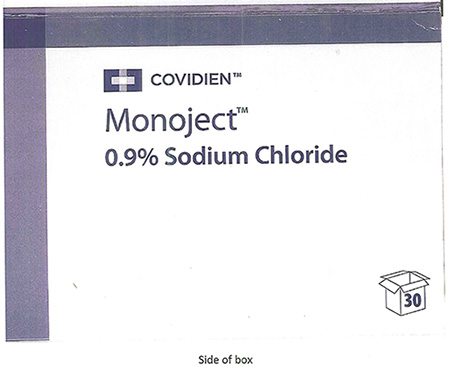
RECALLED – Monoject Prefill Flush Syringes

August 19, 2013 – Product Recall – Covidien Initiates a Voluntary Recall of Certain Lots of Monoject™ Prefill Flush Syringes Sold in the United States and Bermuda.